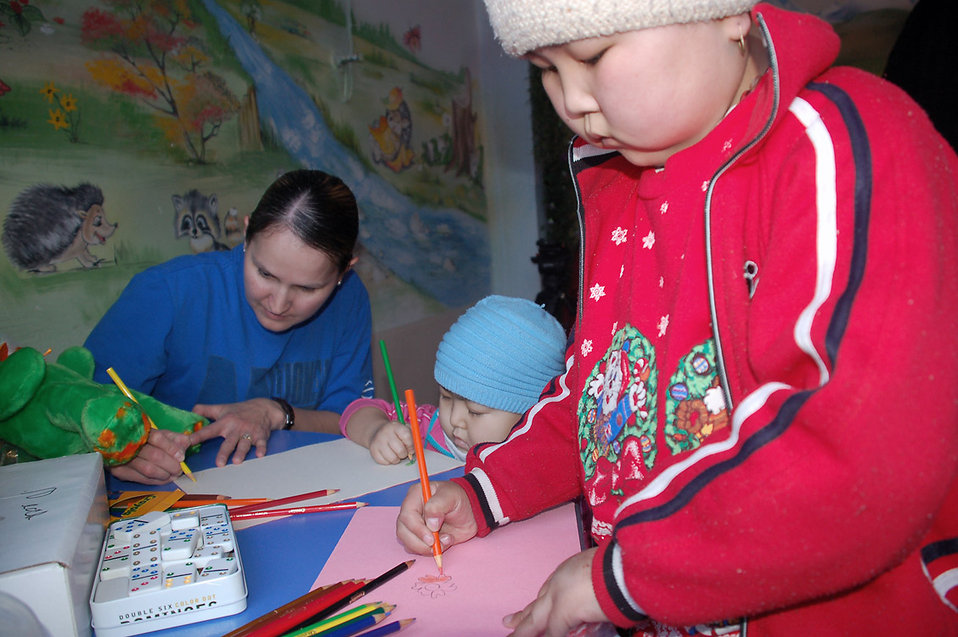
Manas Airmen tend to children's cancer center needs

Tech. Sgt. Geraldine Clark draws pictures with children who are recovering cancer patients Feb. 25 at Kyrgyzstan's sole Children's Cancer Hospital. Sergeant Clark spent some of her off-duty time with others from Manas Air Base, Kyrgyzstan. Sergeant Clark is assigned to the 376th Expeditionary Medical Group and is deployed from Peterson Air Force Base. Colo. She is originally from Rosebud. S.C.